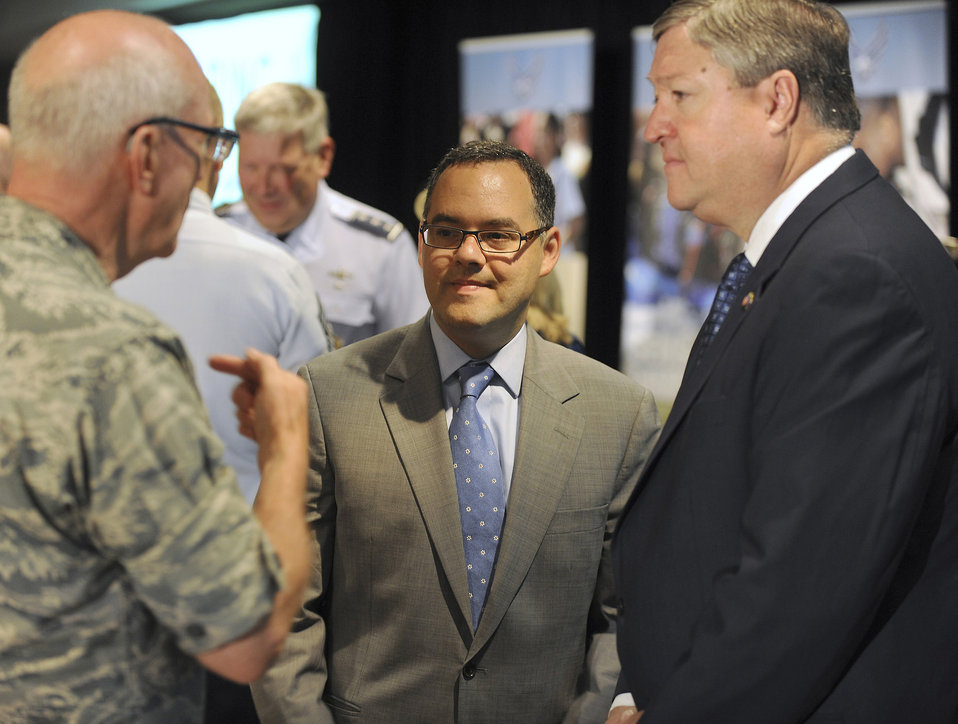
Air Force Caring for People forum begins

Secretary of the Air Force Michael Donley (right) and Assistant Secretary of the Air Force for Manpower and Reserve Affairs Daniel Ginsberg visit with Maj. Gen. Cecil Richardson, Air Force chief of chaplains, during the Caring for People forum July 19, 2011, in Arlington, Va. Donley made the opening remarks for the three-day event.